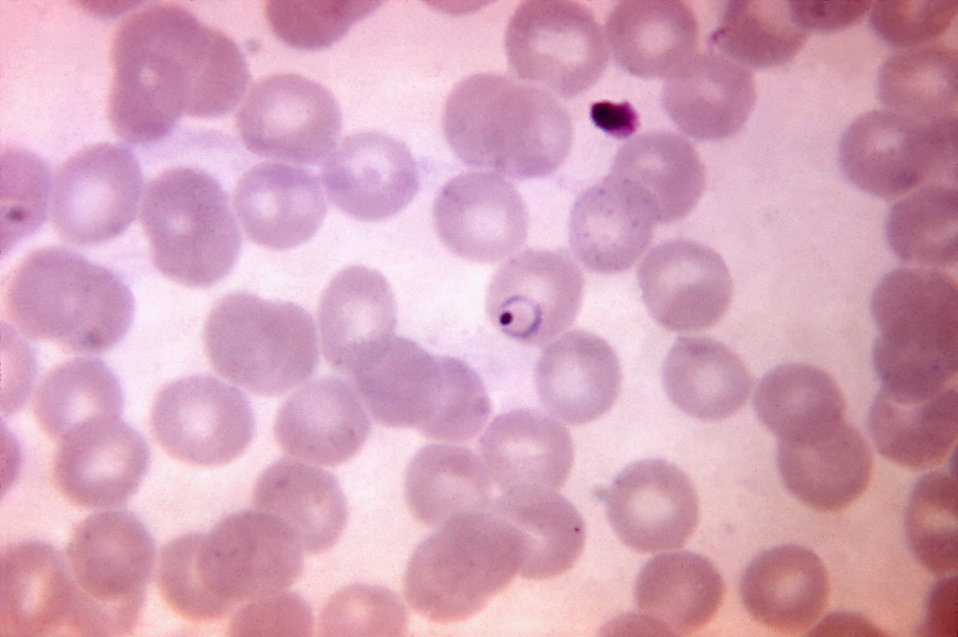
This blood smear micrograph revealed the presence of a Plasmodium vivax ring form.